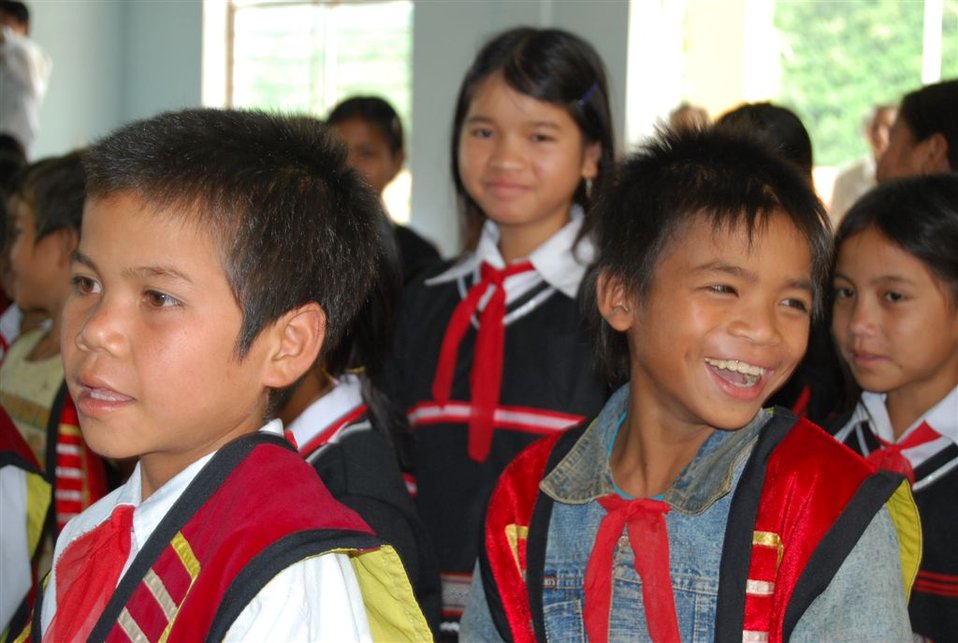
Students enjoy their new school